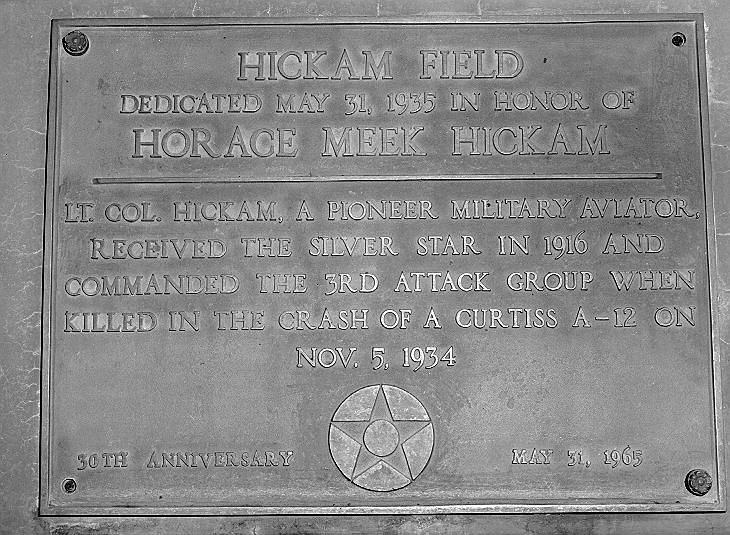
30th Anniversary plaque

A plaque naming Hickam Field in honor of Lt. Col. Horace Hickam was presented to base officials in 1965 during the 30th Anniversary of the naming. Colonel Hickam was killed in a plane crash in 1934.